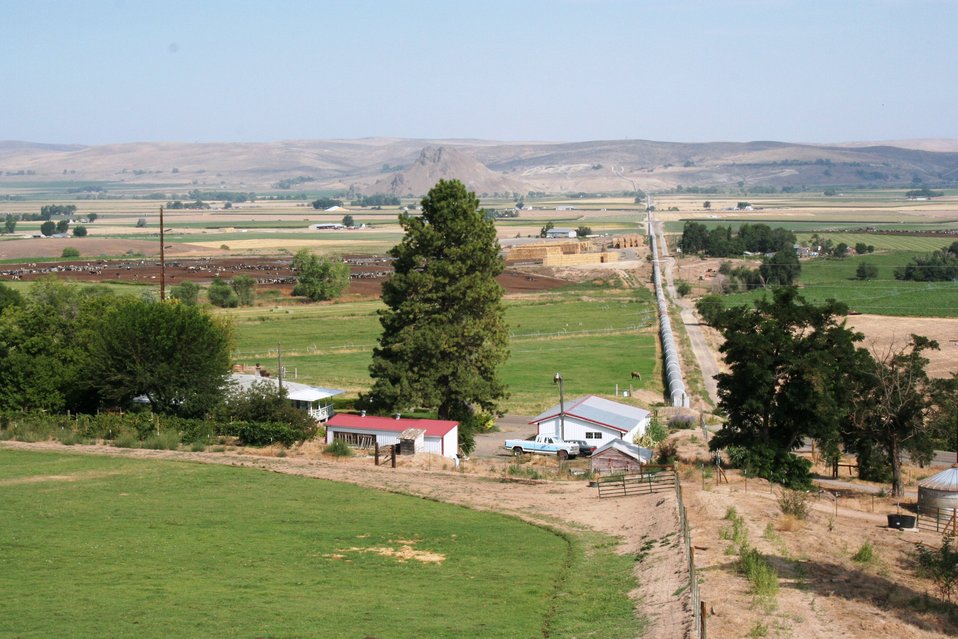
On the Road with Mike Taylor

FDA Deputy Commissioner Michael Taylor and colleagues started a five-day tour of the Pacific Northwest on Sunday, Aug. 11, 2013 -- visiting Idaho, Oregon and Washington -- to get a first-hand look at produce production and irrigation operations, and to discuss the proposed Produce Safety Rule with growers, food industry representatives and state officials. This is a photo of the Owyhee Irrigation District in southeast Oregon. For more about Mike's multi-region tour, read these FDA Voice blog posts:

• Hearing the Concerns of Maine Growers Striving for Agricultural Diversity
• On the Road with Mike Taylor: Touring the Pacific Northwest
• On the Road with Mike Taylor, Day 2: Frank Talk in Farm Country
• On the Road with Mike Taylor, Day 3: Families and Partnerships